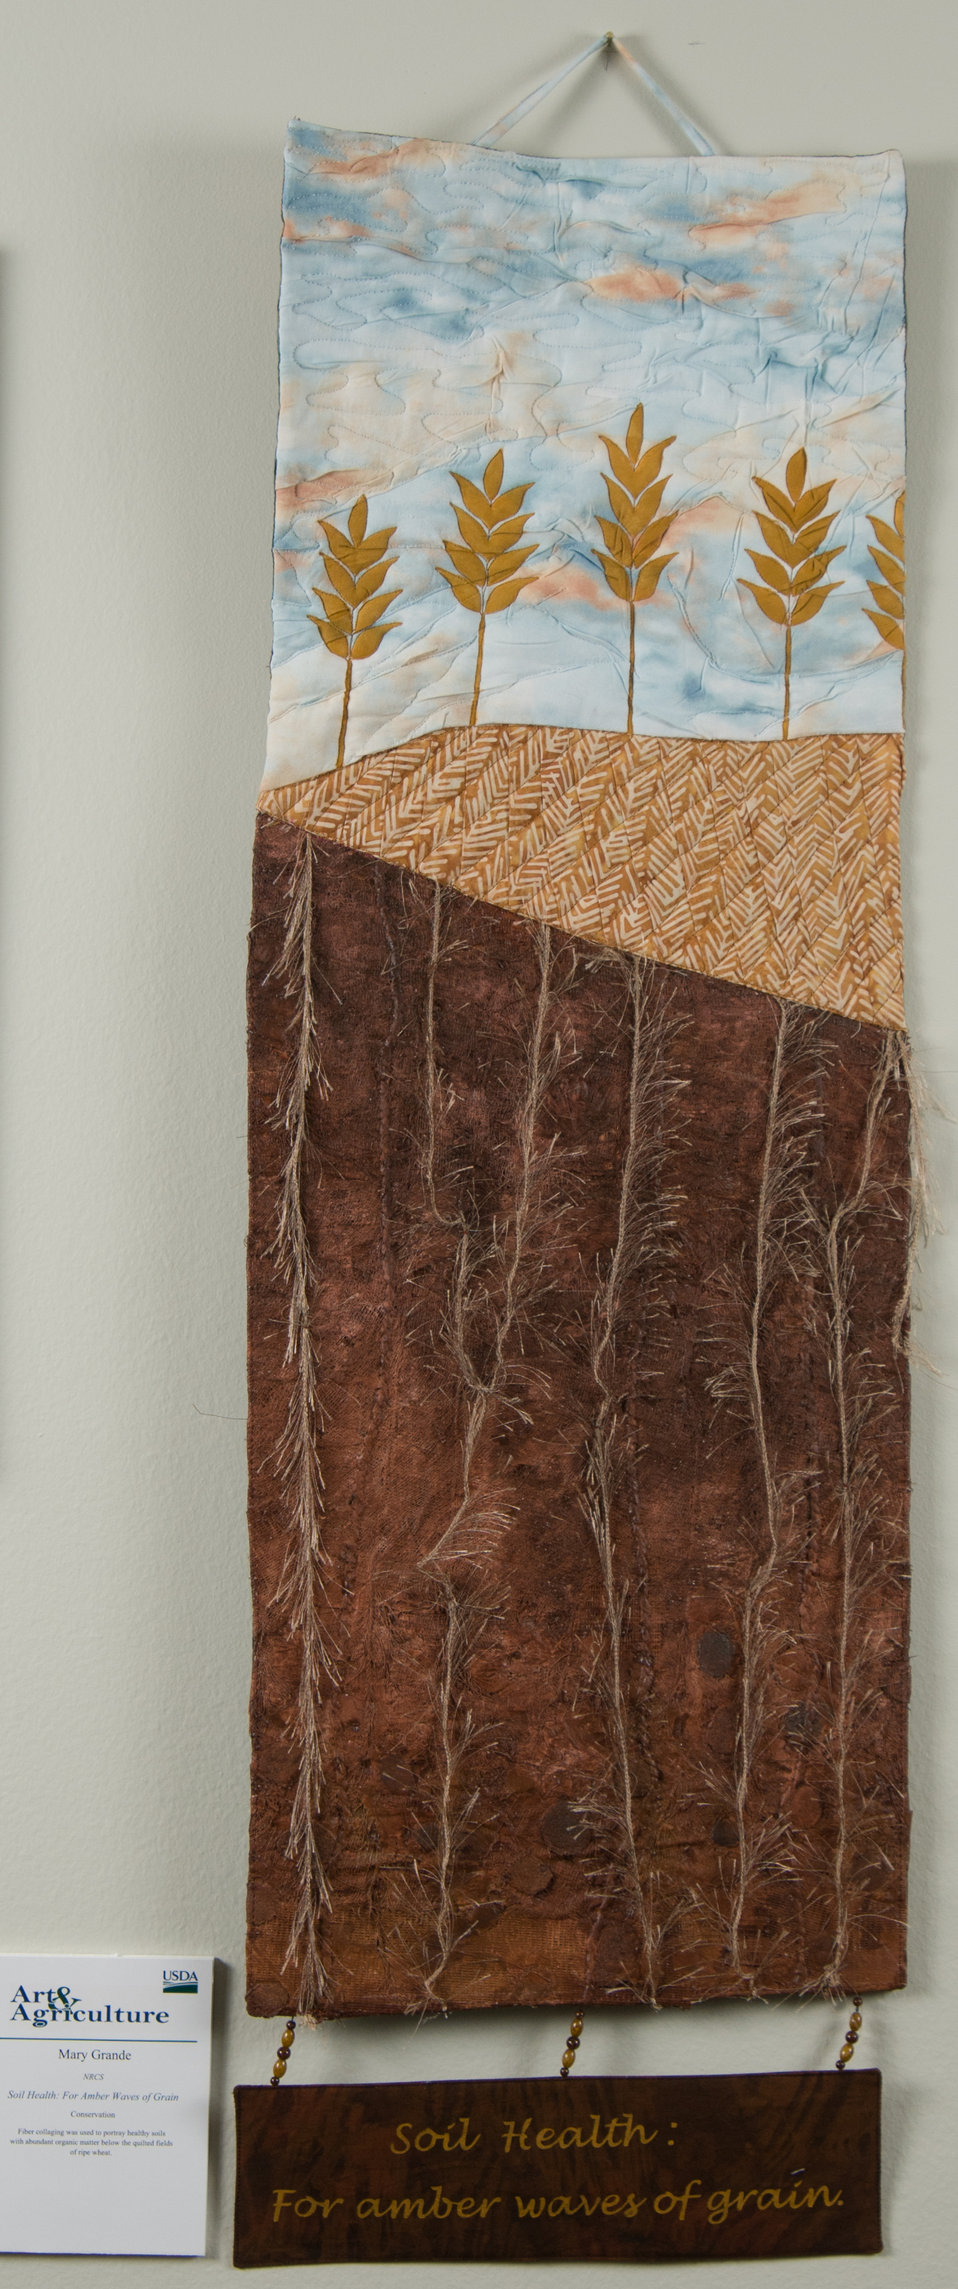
Online Viewer's Choice entries of the 2013 Art & Agriculture, Tuesday, July 9, 2013, in the South Building, Washington, D.C. Themes were expressed by employees from across the department and the contest was open to full-time and part-time USDA employees. Winning artwork will be displayed till the end of the year. U.S. Artistic expression is a creative outlet that is vital for an individual to grow and develop.